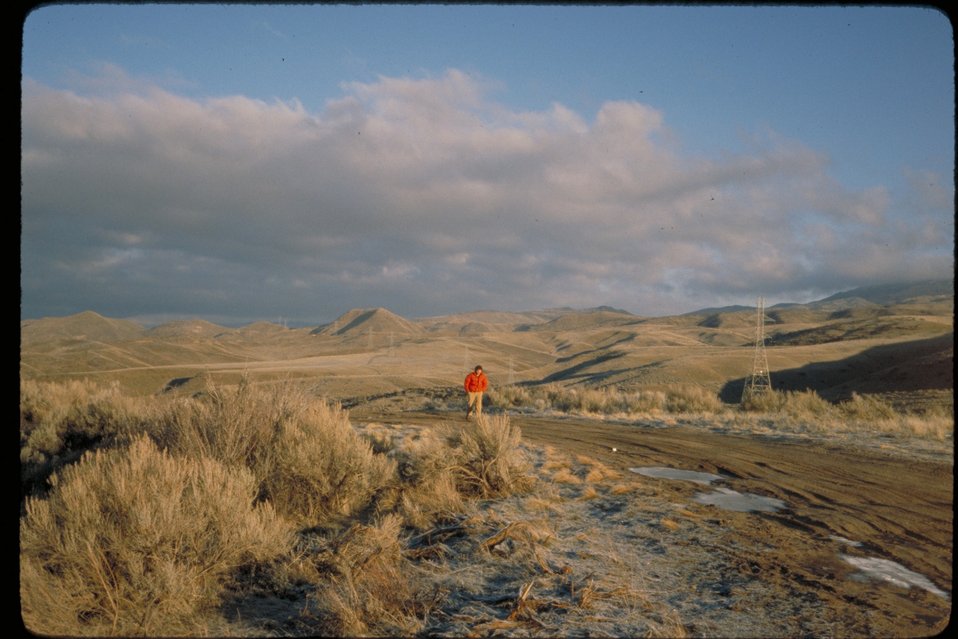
Powerline Boise Front Four Rivers Field Office LSRD Lower Snake River District